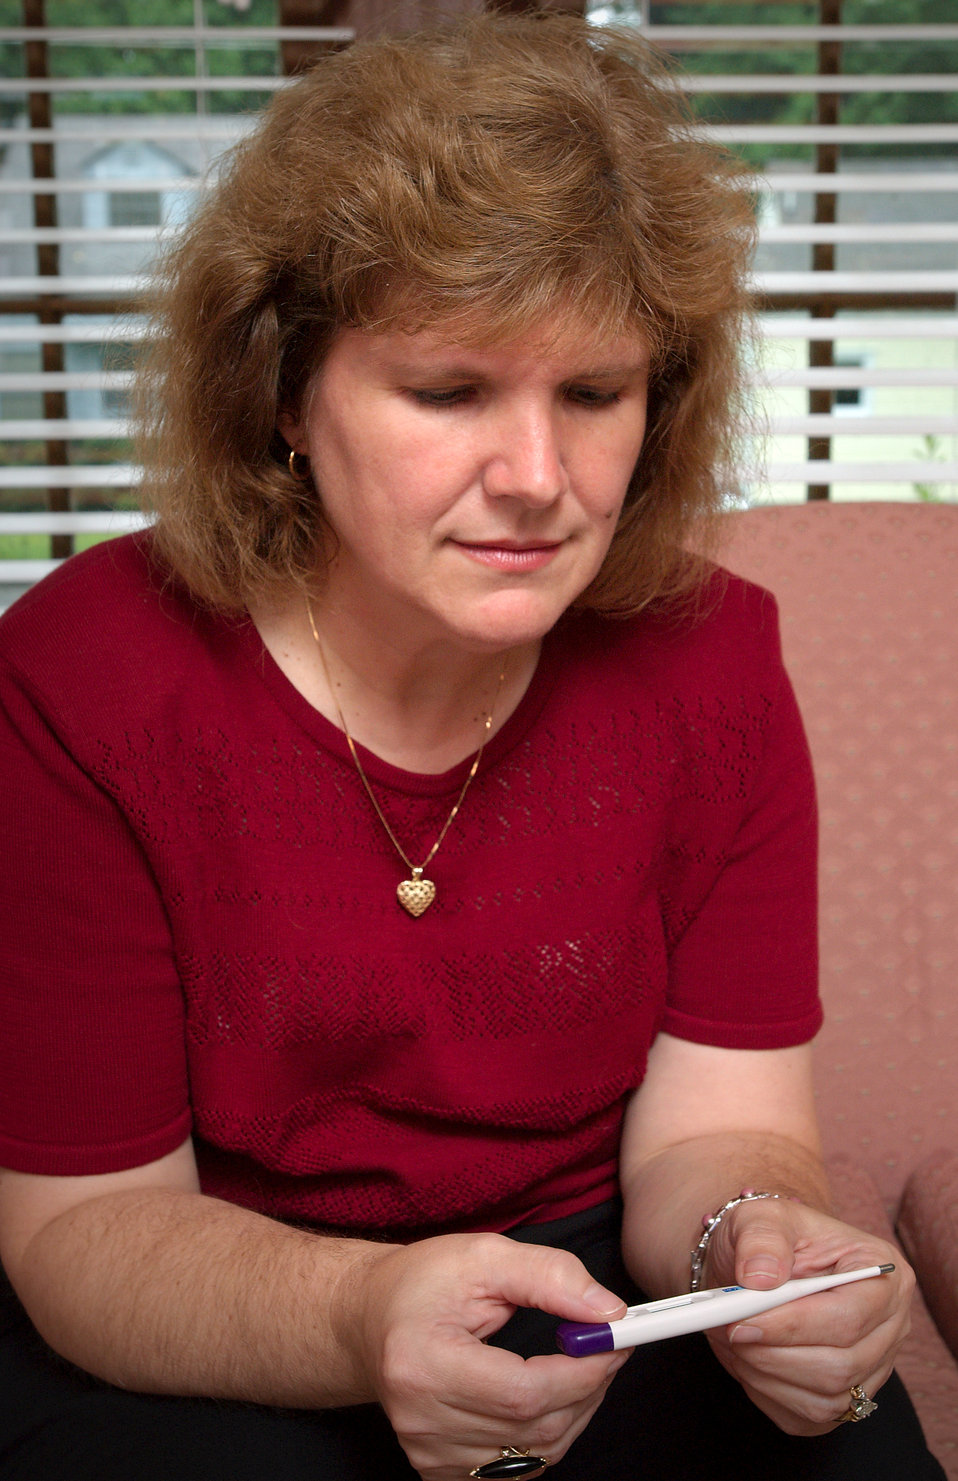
The woman shown in this 2005 photograph was 'reading' the results revealed by an oral thermometer, as she was in the process of measuring her body temperature.